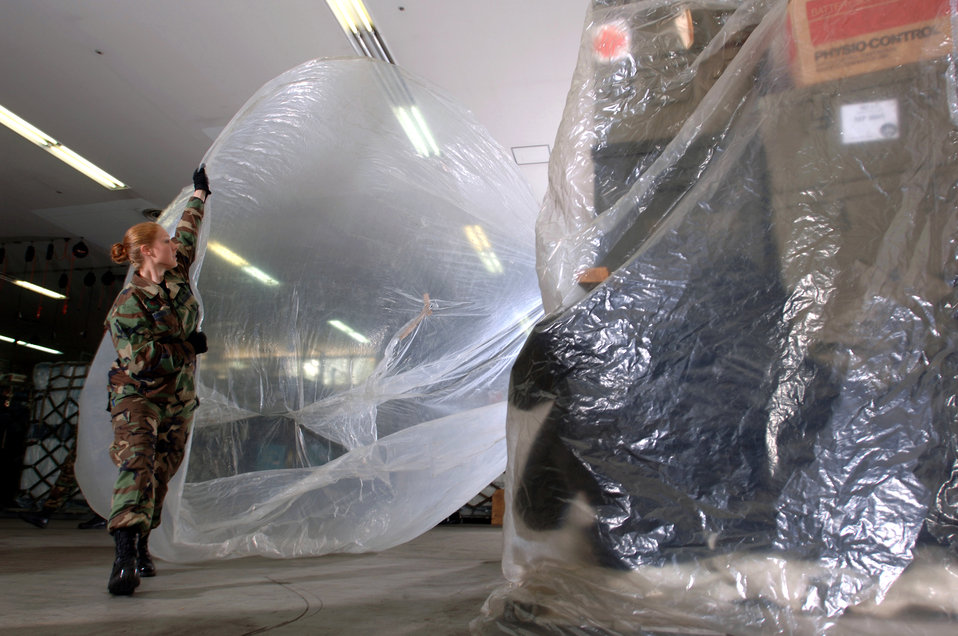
Pallet protection

YOKOTA AIR BASE, Japan -- Airman Jessica Johnson covers an expeditionary medical support pallet with a plastic sheet. The 374th Medical Group logistics Airmen here handle about $24 million worth of medical war reserve materiel supplies and equipment for contingency operations.